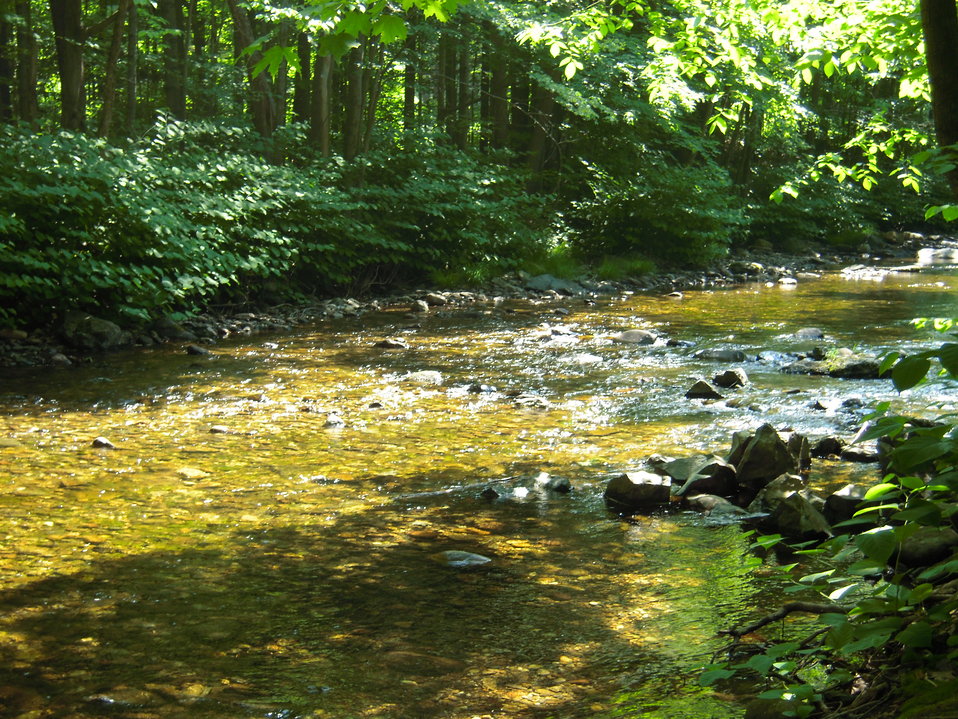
Saw Mill River